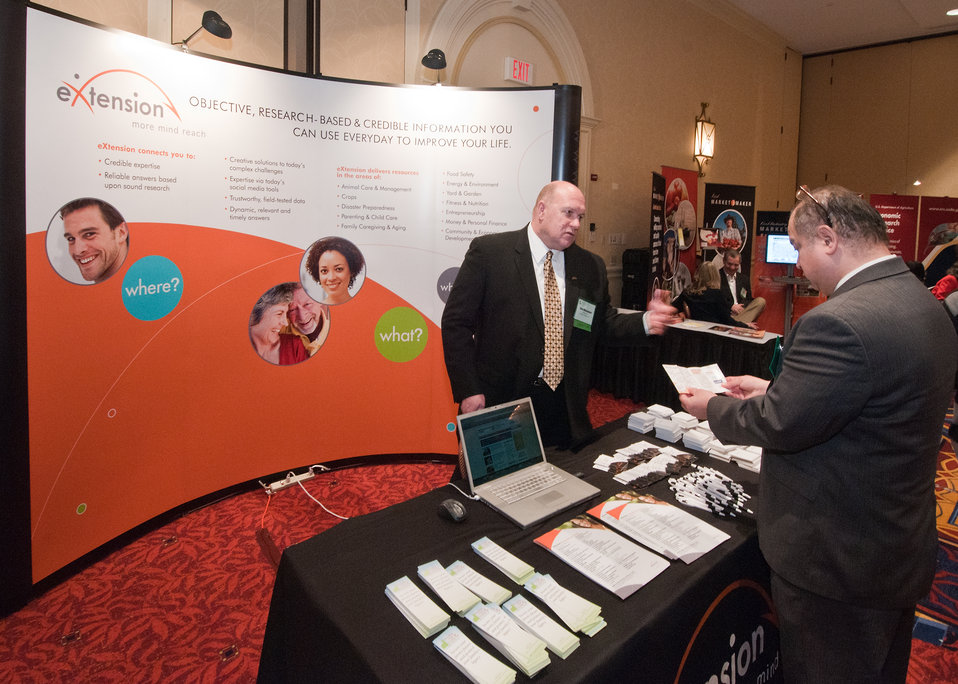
Terry Meisenbach (left), Communications and Marketing Leader, “eXtension Initiative” explains the “eXtention Initiative” part of the Cooperative Extention System to Richard Fierroz, United States Department of Agriculture, Office of Operations, USDA Visitor’s Center. Fierroz mentioned, “eXtention” would be a great resource for agriculture, gardening and farming needs for visitors so they have options when they visit. Meisenbach’s exhibit was on display in the exhibit hall at the World Agricultural Outlook Board Forum in Crystal City, VA, on Thursday, February 24, 2011.